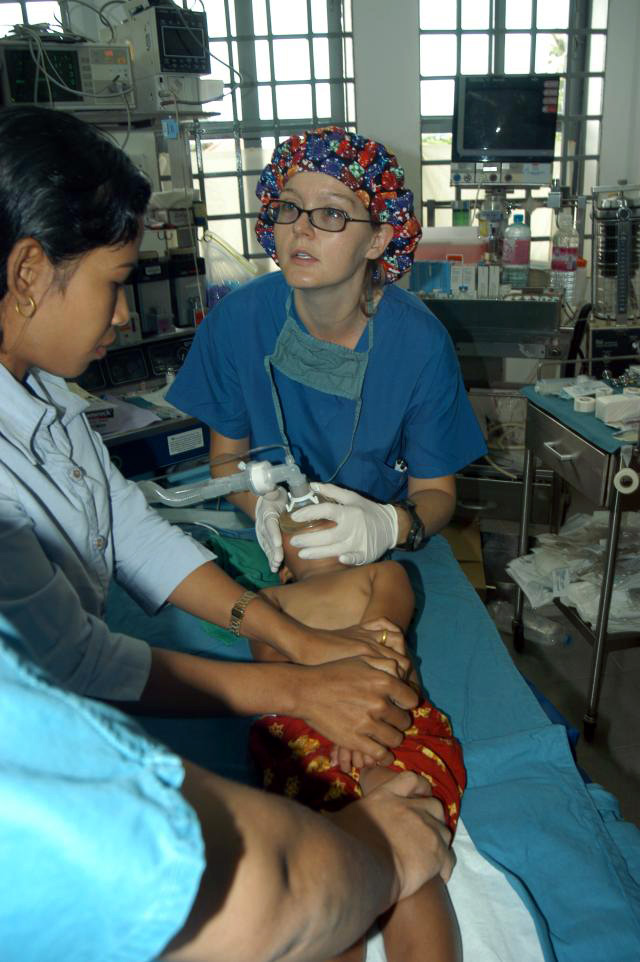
Care in Cambodia

KEP, Cambodia -- Capt. (Dr.) Amanda Alford asks a Cambodian mother to hold her daughter as she prepares the young girl for cleft lip surgery May 18 at a hospital compound here. Dr. Alford is part of a 20-member blast resuscitation and victim assistance mission team that arrived here for a two-week humanitarian mission. She is an anesthesiologist with the 99th Medical Operations Squadron at Nellis Air Force Base, Nev.